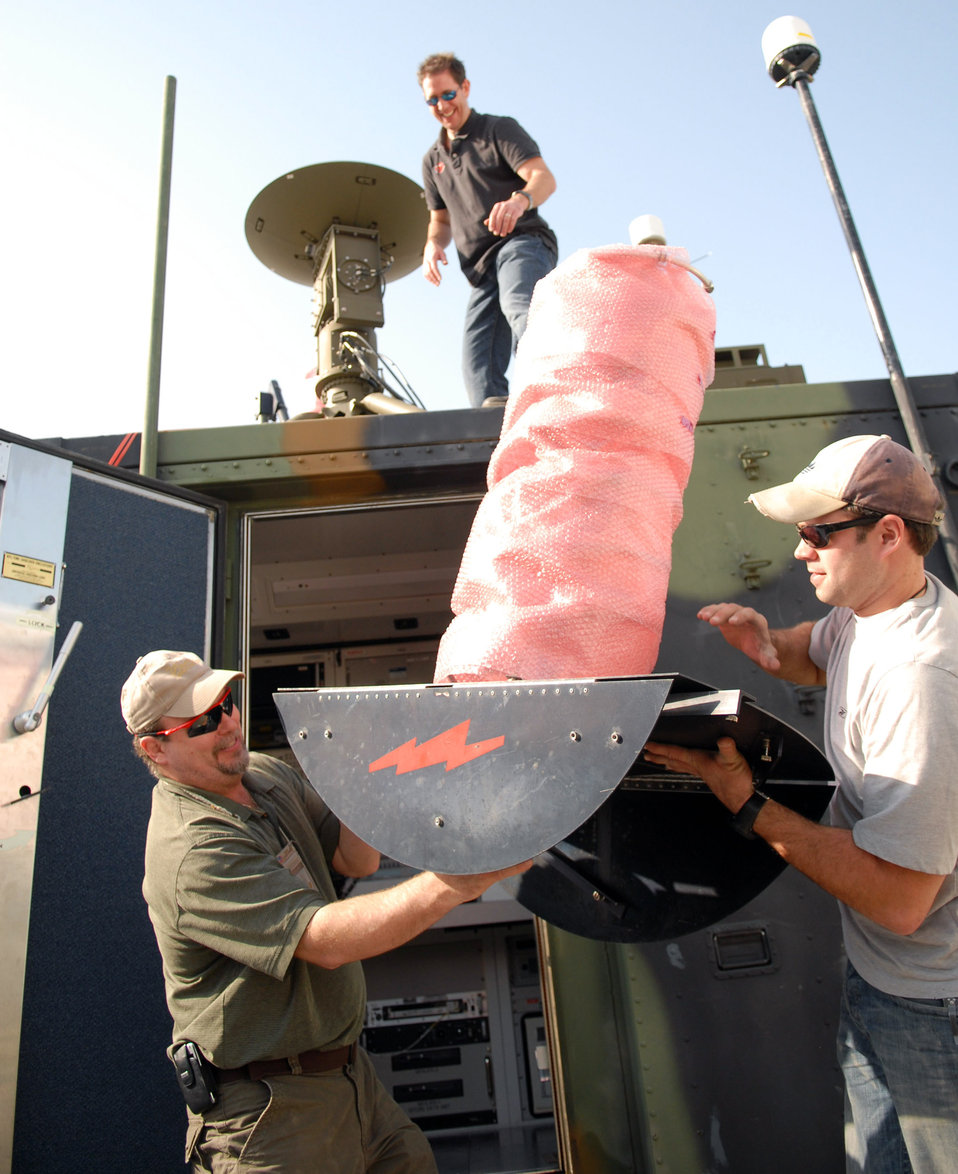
Navy Global Hawk arrives in Southwest Asia

Eddie Evans (left) and Troy Rappleye hand an ultrahigh frequency satellite antenna to Michael Williams that is being installed at an airbase in Southwest Asia. The antenna will provide a wideband link to the Navy's first Global Hawk in the area of operations. Mr. Rappleye and Mr. Williams are field support representatives for L3 Communications, while Mr. Evans is an aircraft ground technician with Northrop-Grumman.